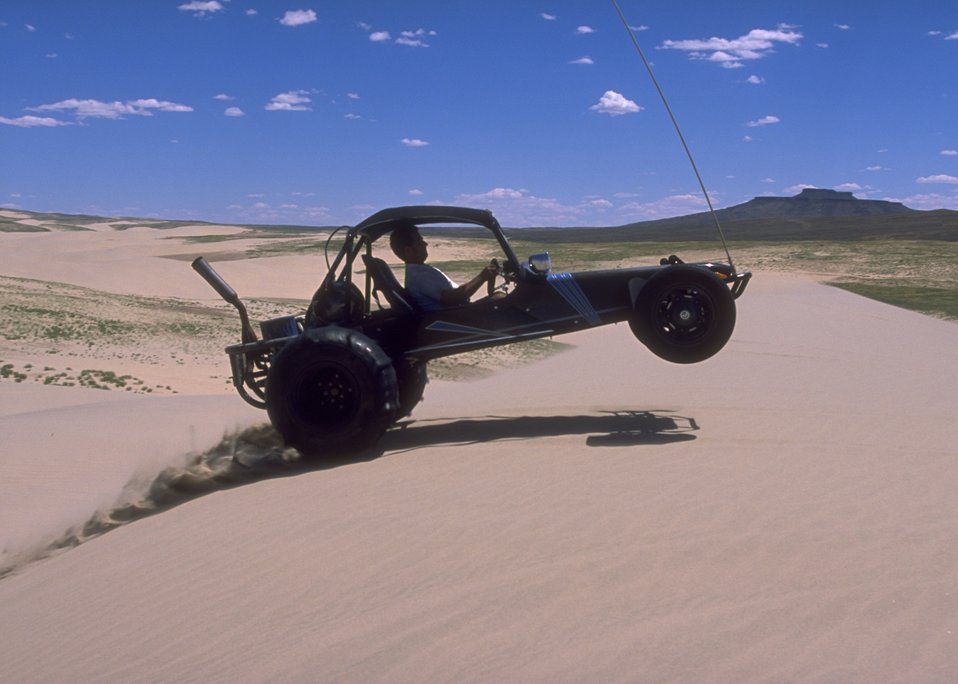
Sand Dunes OHV Area, Rock Springs Field Office.